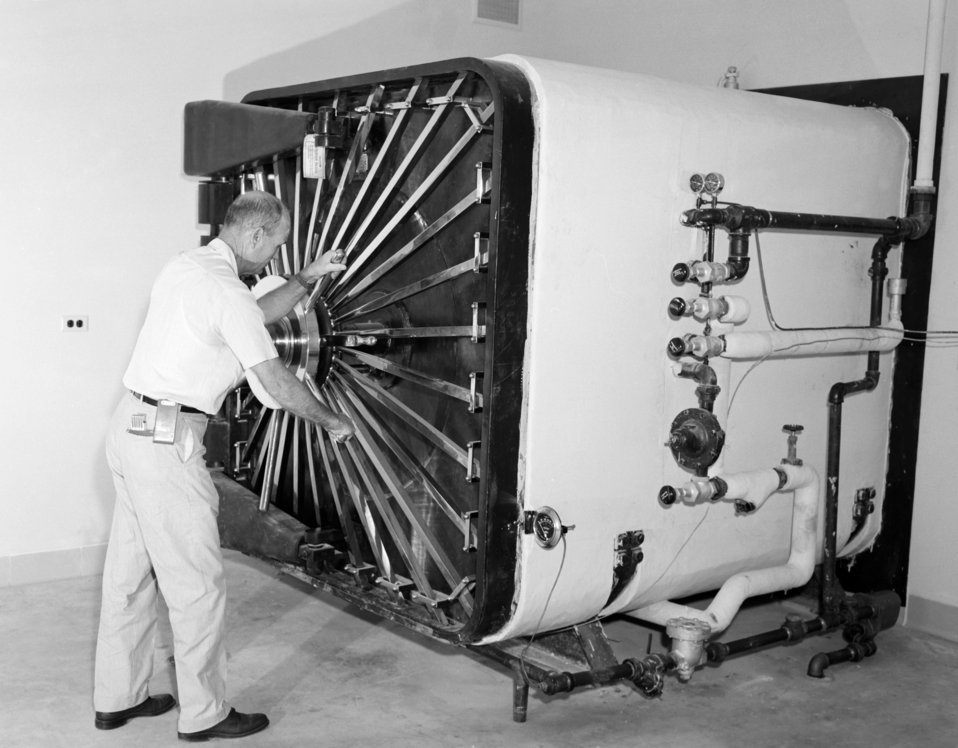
A technician opens an animal cage sterilizer located in the animal research facility in CDC, Clifton Road, Bldg. 4.